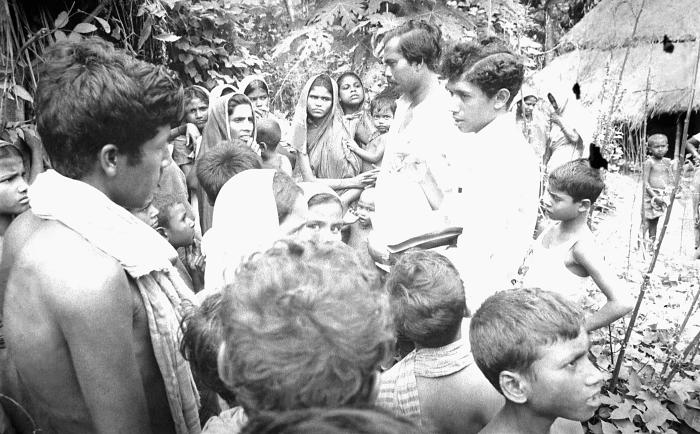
Shahabuddin, a Bangladesh resident, was one of the best Smallpox Surveillance Team leaders involved in the smallpox eradication efforts, and was shown here presenting the 'smallpox card', which presented an example of the disease, described the reward associated with ones discovery of a smallpox case, and asked if one knew of any such cases. During these country wide searches for smallpox, each one of the 12 million homes had to be visited, in order to show residents the smallpox case photograph, as well as to announce the money reward for anyone reporting a case, and to ask if they had seen or knew of any cases resembling the one pictured. Shahabuddin's team discovered the last cluster of smallpox cases located in southern Bangladesh, on Bhola Island, which is located in the Bay of Bengal.